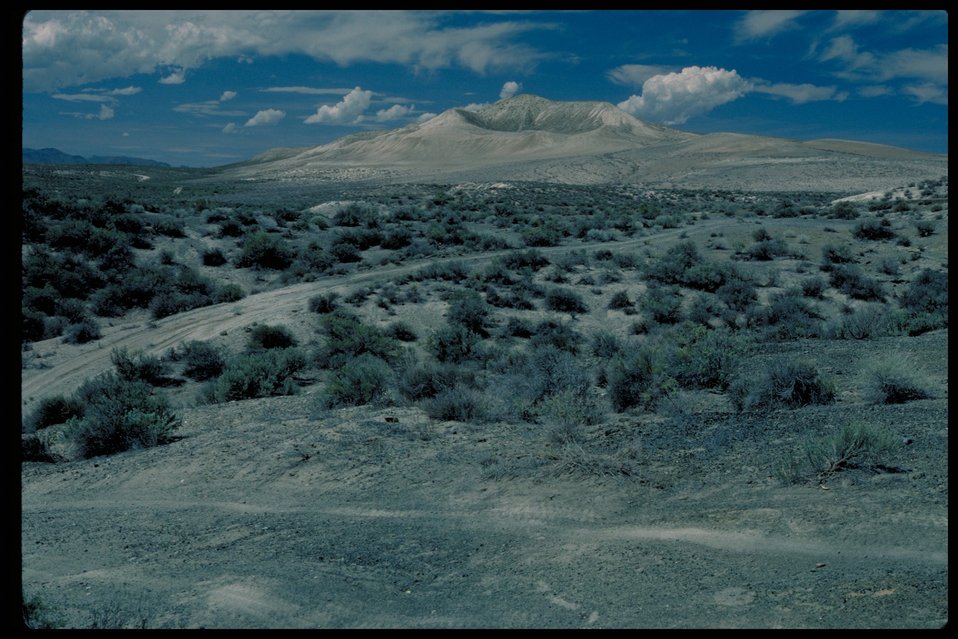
Oregon Trail west of Wild Horse Butte Lower Snake River District